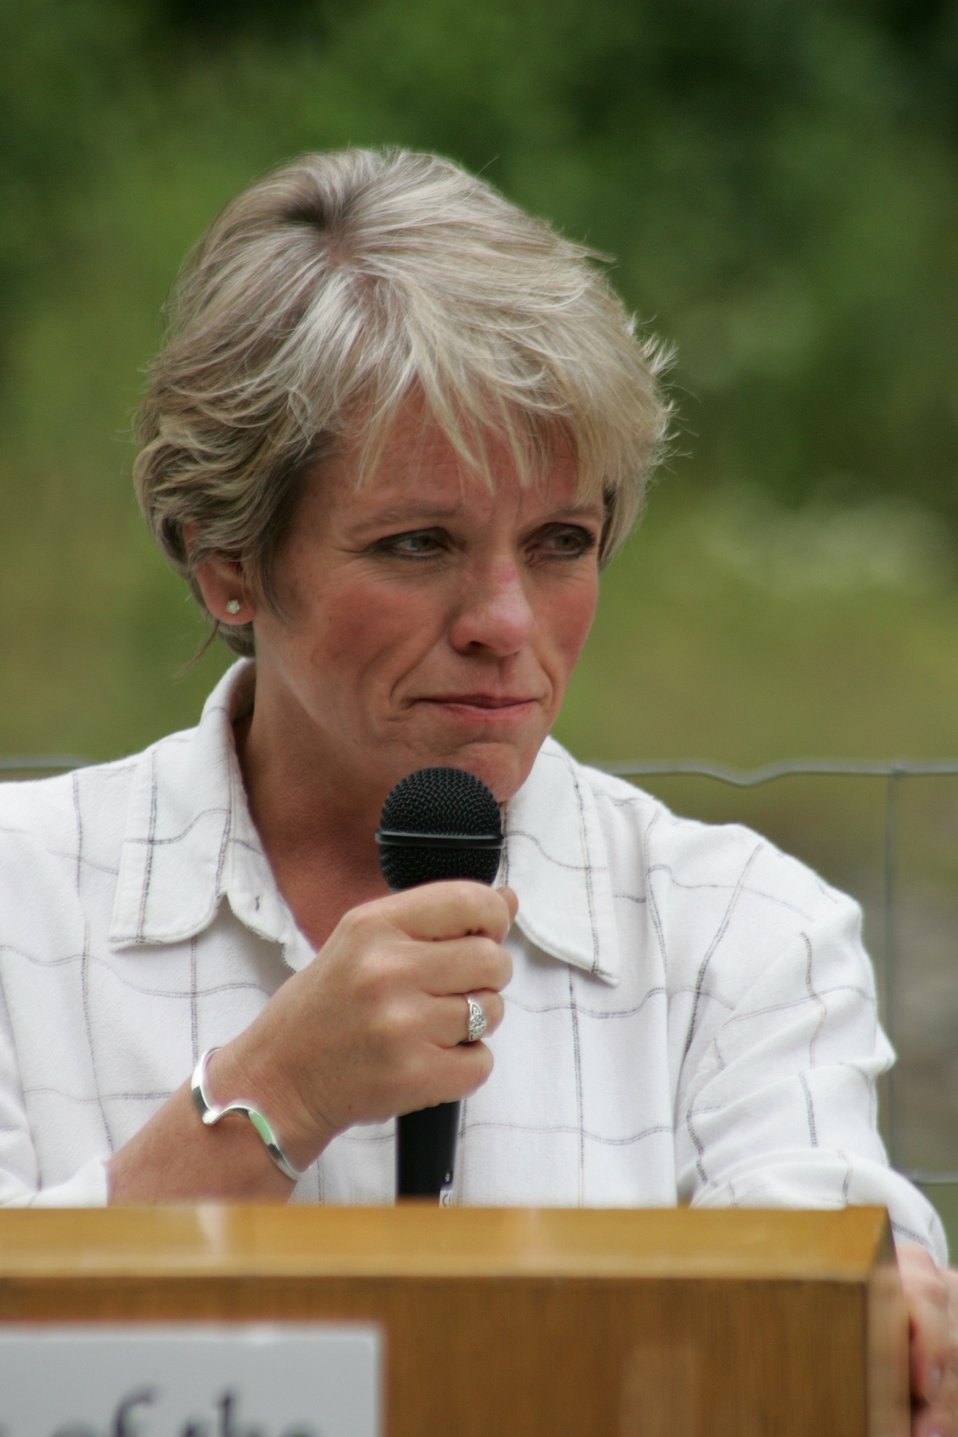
Kathleen Clarke, BLM Director, presents the Four C's Award at the Little Sandy Dam to PGE and the Western River Conservancy.